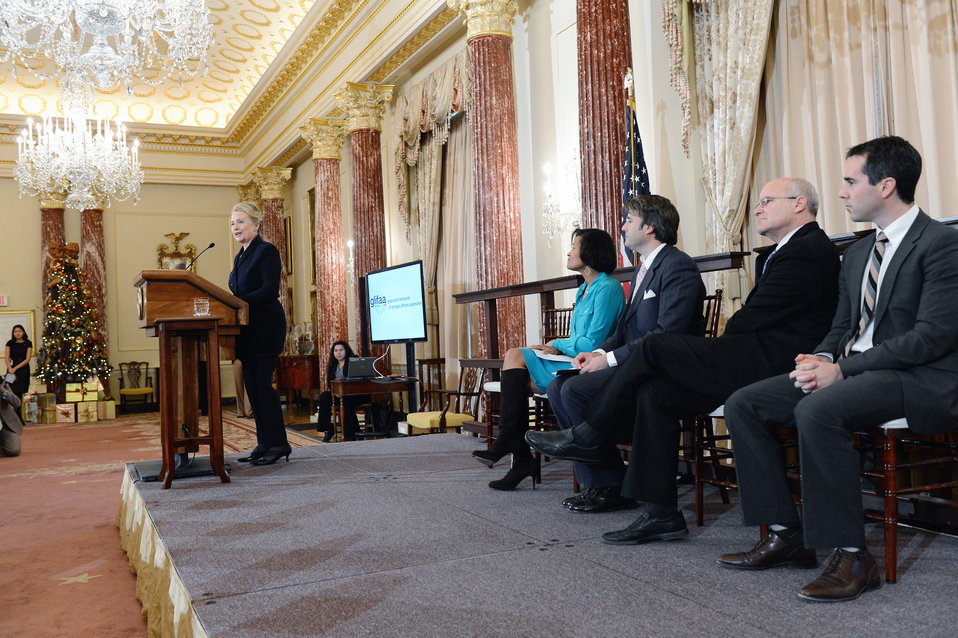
Secretary Clinton Delivers Remarks at the GLIFAA 20th Anniversary Celebration

U.S. Secretary of State Hillary Rodham Clinton delivers remarks at the Gays and Lesbians in Foreign Affairs (GLIFAA) 20th Anniversary celebration at the U.S. Department of State in Washington, D.C., November 28, 2012.